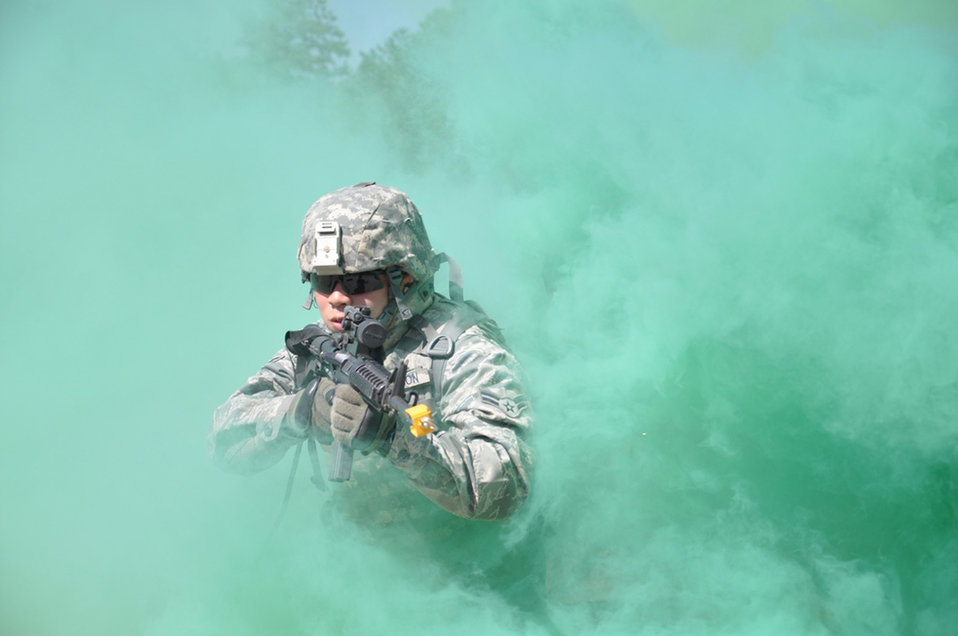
JET Combat Skills Training

Airman 1st Class John Fallesgon peers through the smoke to engage enemy during a foot patrol at combat-skills training Sept. 2, 2010 at Joint Base McGuire-Dix-Lakehurst, N.J. Airman Fallesgon is a food services chef at Langley Air Force Base, Va.